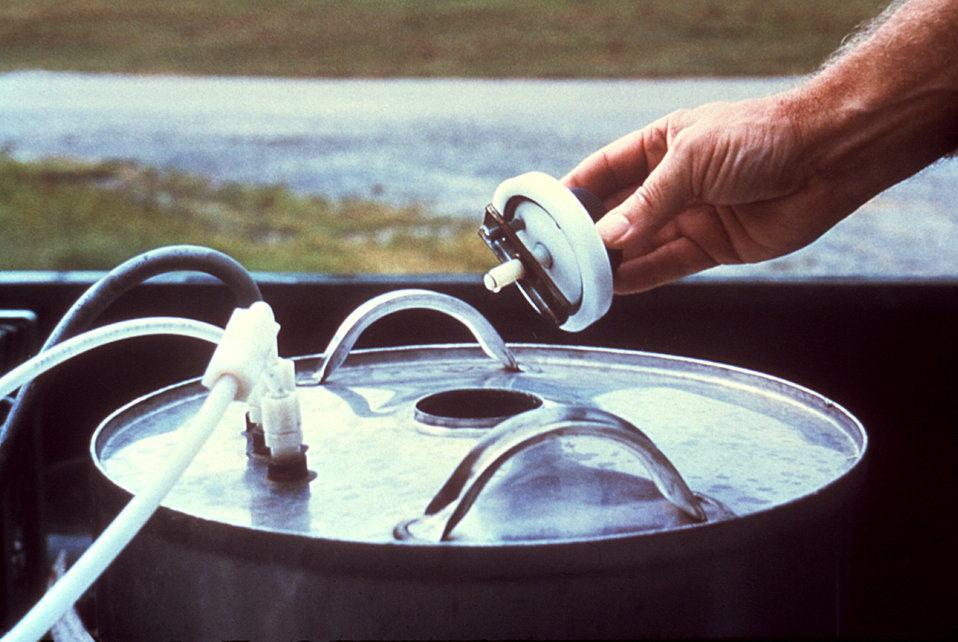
This 1981 image depicts a close-up perspective of the insecticidal tank located on a truck-mounted LECO-HD ULV (ultra-low volume) non-thermal fog generator.